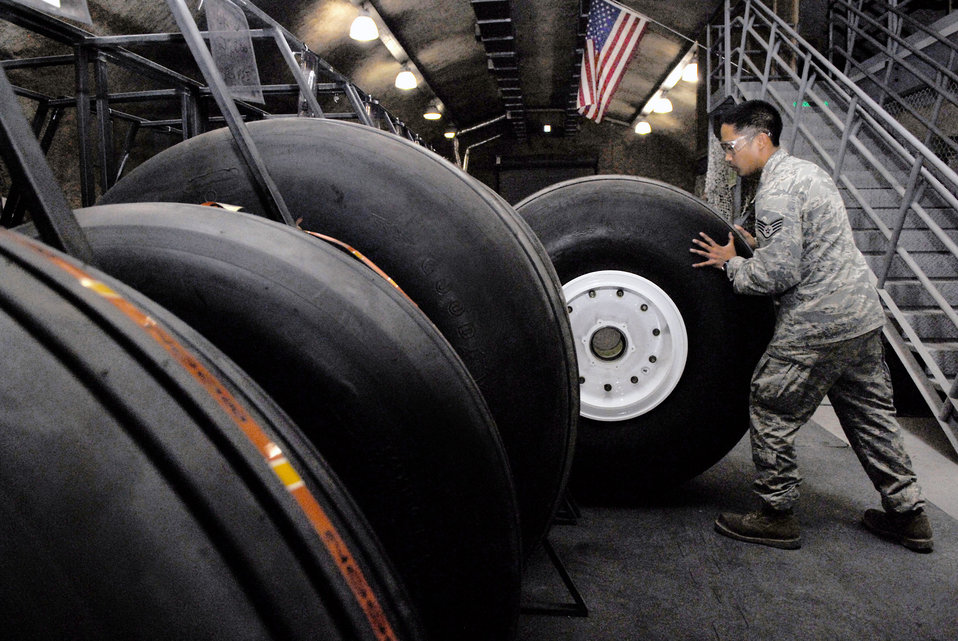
Wheel and tire shop rolls on

Staff Sgt. Ruben Ramones stores a C-130 Hercules wheel and tire after it passed the assembly inspection April 13 at an air base in Southwest Asia. The base wheel and tire shop supports eight forward operating locations and seven different types of aircraft with a full range of services. Sergeant Ramones is the wheel and tire shift lead for the 379th Expeditionary Maintenance Squadron, and is deployed from Yokota Air Base, Japan.